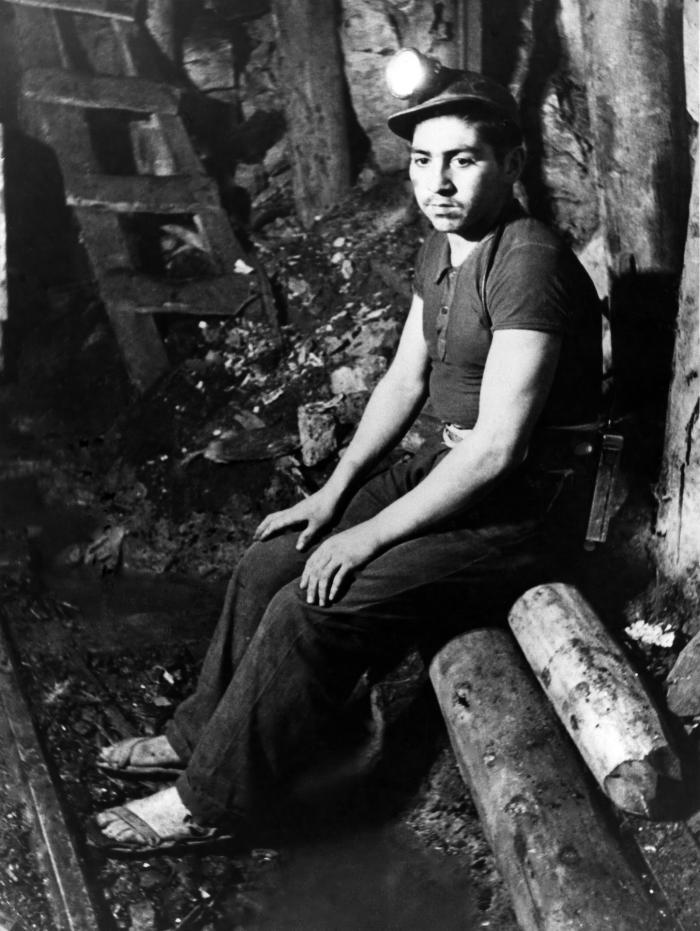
From April, 1948, this historic image, provided by the Center for Disease Control's (CDC), National Institute for Occupational Safety and Health (NIOSH), depicted a Chilean miner who was seated inside the confines of a coal mine. The exhaustive work meant a miner needed to take rest breaks, using respites to regain some stamina needed to complete his rigorous tasks. Note that the miner was not wearing any protective breathing mask, gloves, or googles, and his feet were clad in mere sandals, exposing him to numerous potential injuries.Today, the Federal government's stringent regulations on the level of coal dust permissible in the air of a coal mine, and the requisite use of filtered breathing devices, eyewear, boots and gloves, has dramatically lowered the number of cases of black lung disease, blindness, and blunt or abrasive trauma.